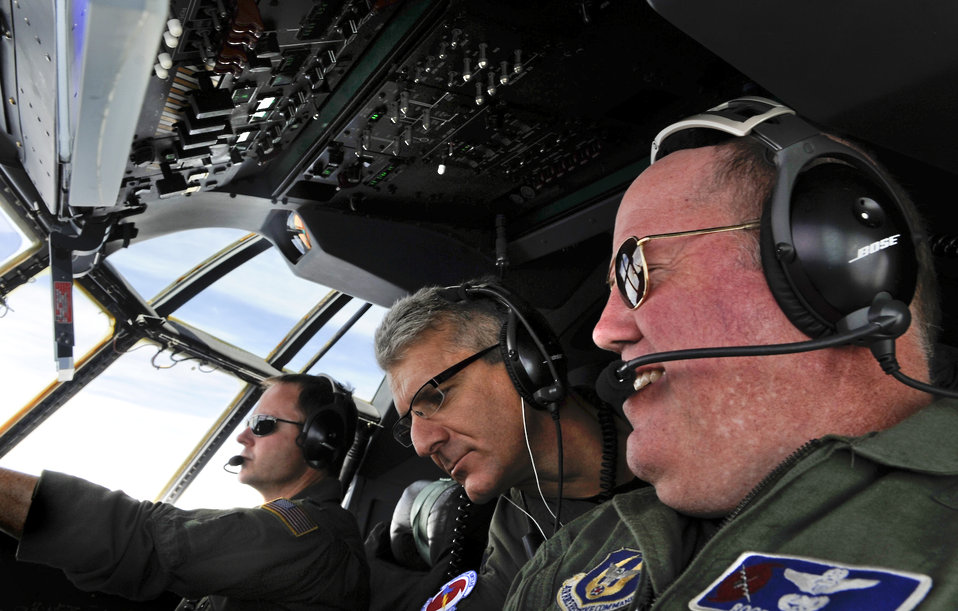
Training with the

Lt. Col. Roger Gardner (right) and Lt. Col. Louis Patriquin fly a WC-130J Hercules during a training mission June 6 to St. Croix, V.I. from Keesler Air Force Base, Miss. Reviewing a checklist is Lt. Col. Jason May, 53rd Weather Reconnaissance Squadron commander. Colonel Gardner is the aircraft commander and Colonel Patriquin is the 403rd Group commander.